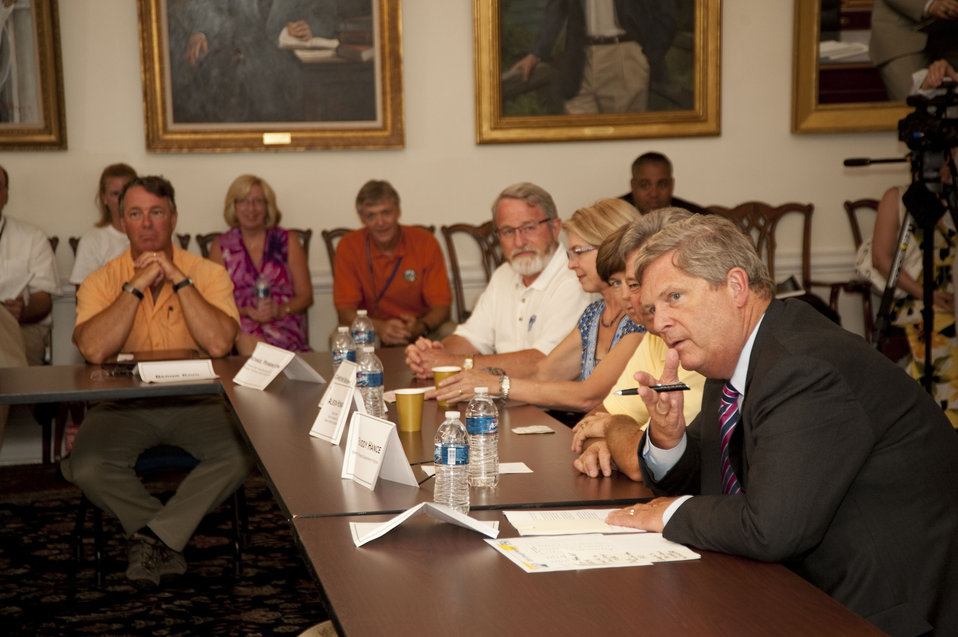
Agriculture Secretary Tom Vilsack meeting with Maryland Agricultural Leaders for a round table discussion in Annapolis, MD, on Thursday, July 21, 2011.